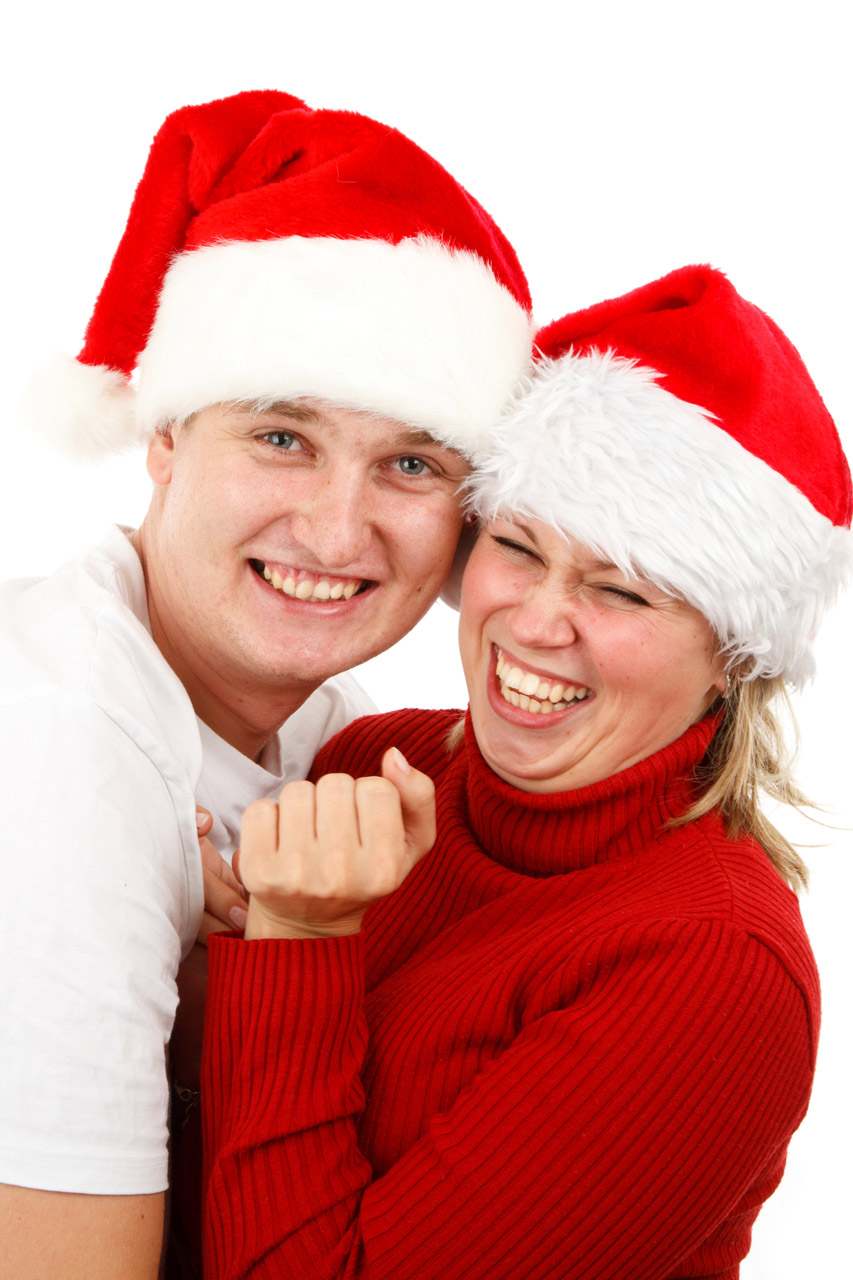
Santas having fun

Young santa couple smiling and having fun isolated on white background.